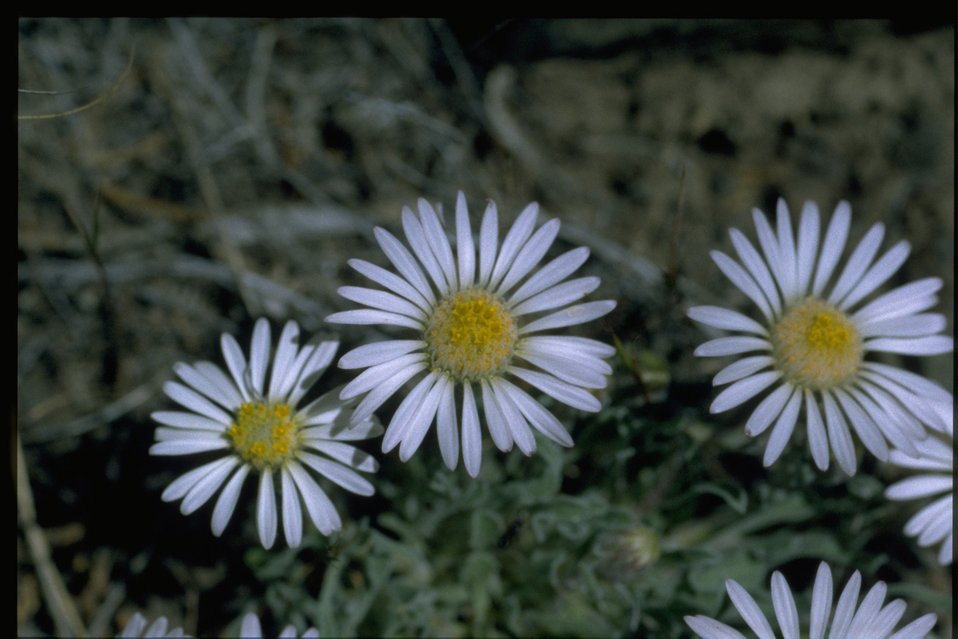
Closeup shot of purple cushion fleabane (Erigeron poliospermus var. poliospermus).